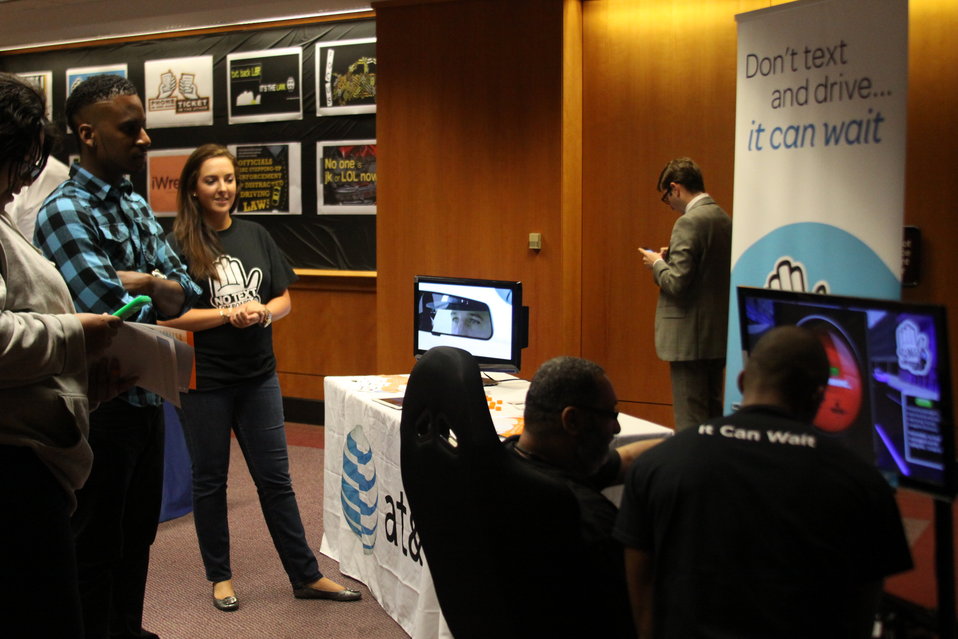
Distracted Driving Technology Showcase April 19, 2013